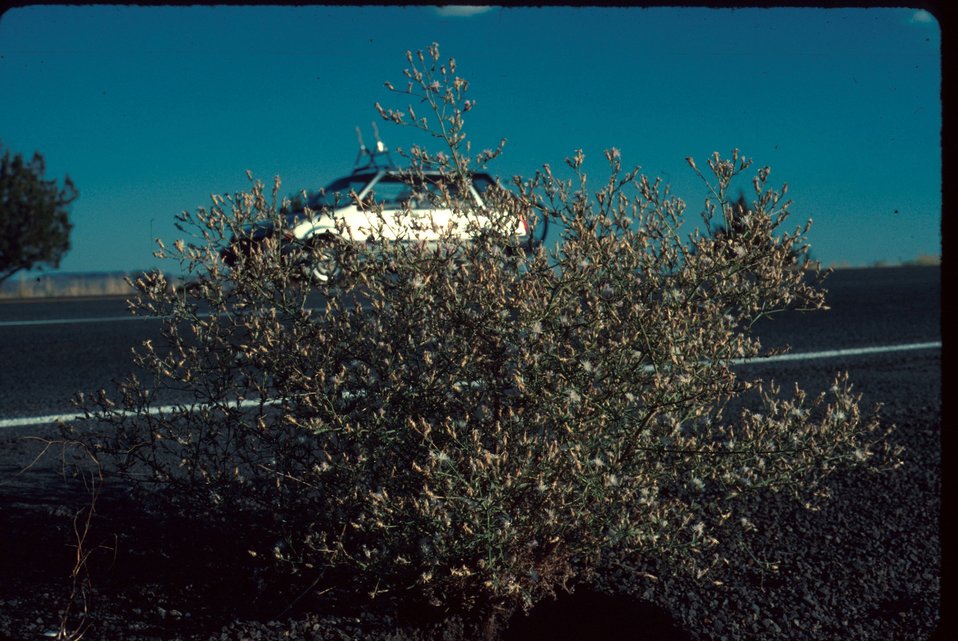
Diffuse knapweed noxious weed